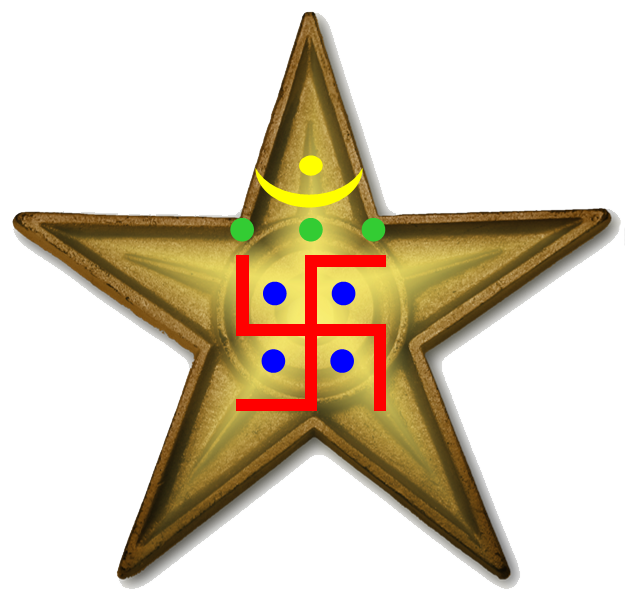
Jainism Barnstar Award